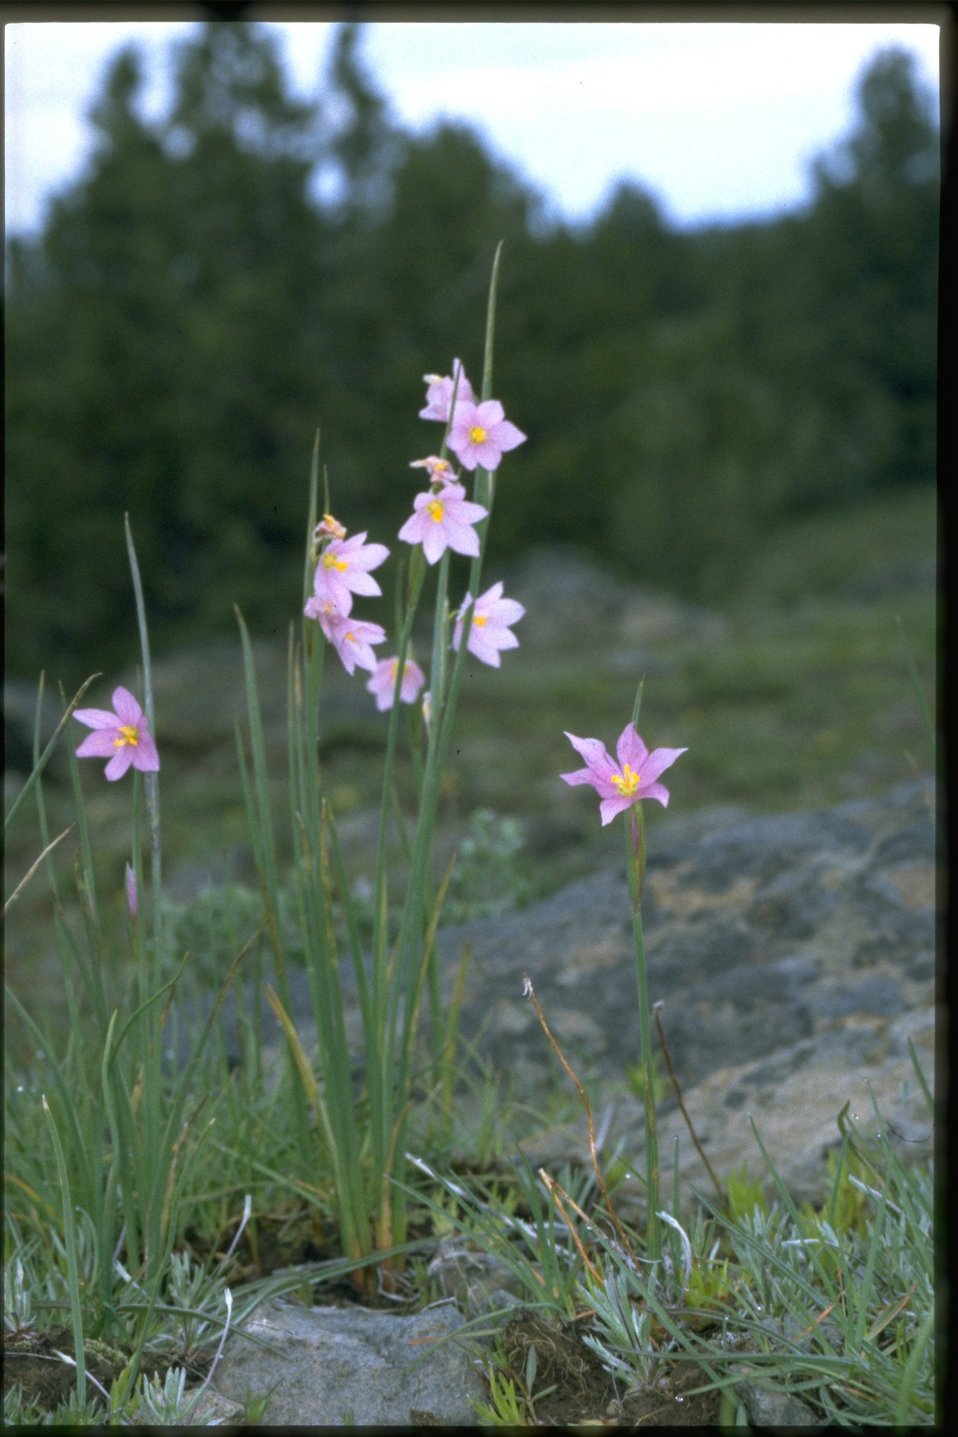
Farshot of Grass Widow, Sisyrinchium Douglasii, wildflowers.